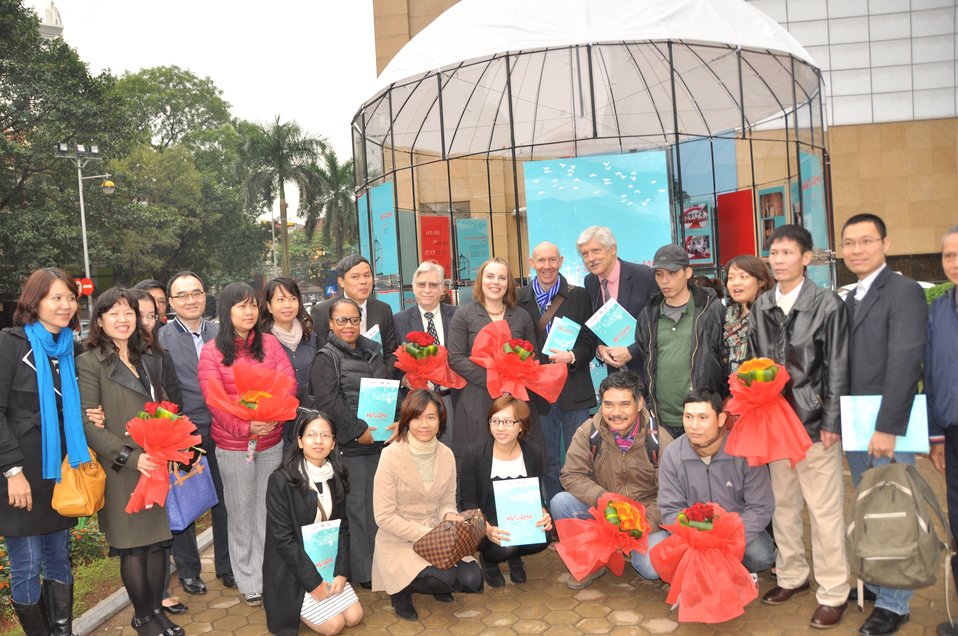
Photo Exhibition Launch

USAID/Vietnam